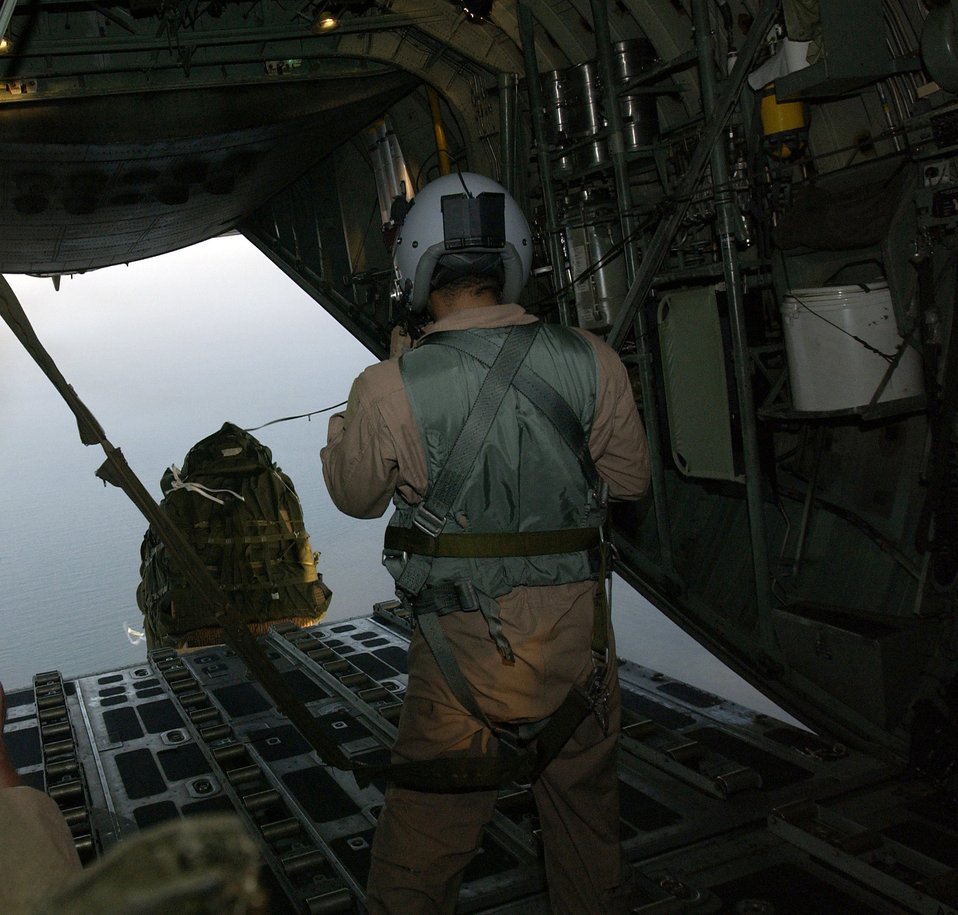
Pallet drop

DJIBOUTI, Africa (AFPN) -- Airman 1st Class Johnnie Jackson watches a pallet drop out of a C-130 Hercules during an airdrop exercise. Airman Jackson is a loadmaster with the 71st Expeditionary Rescue Squadron.